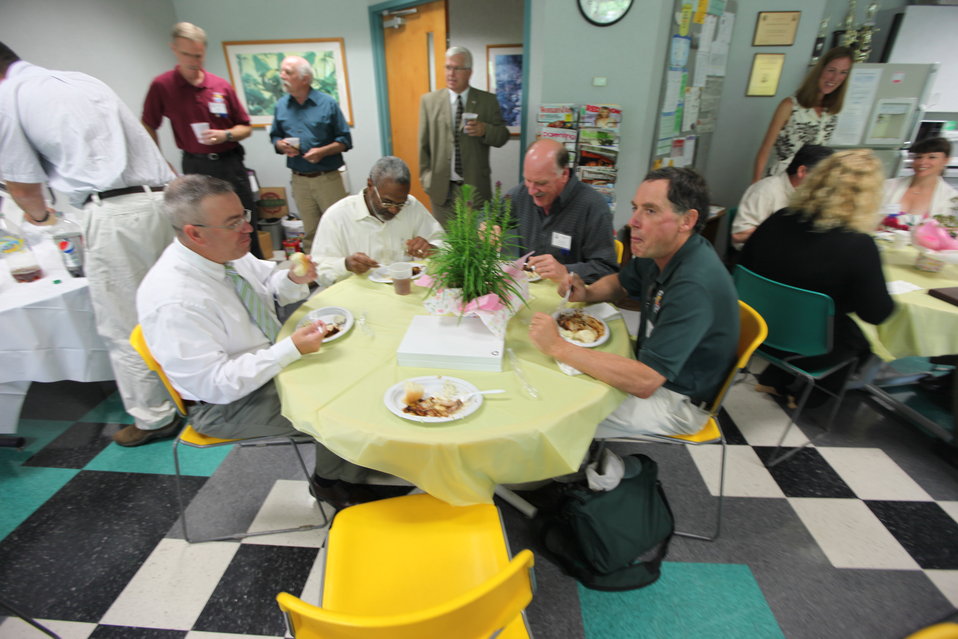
Northeast Region Employee Appreciation Awards

Luncheon